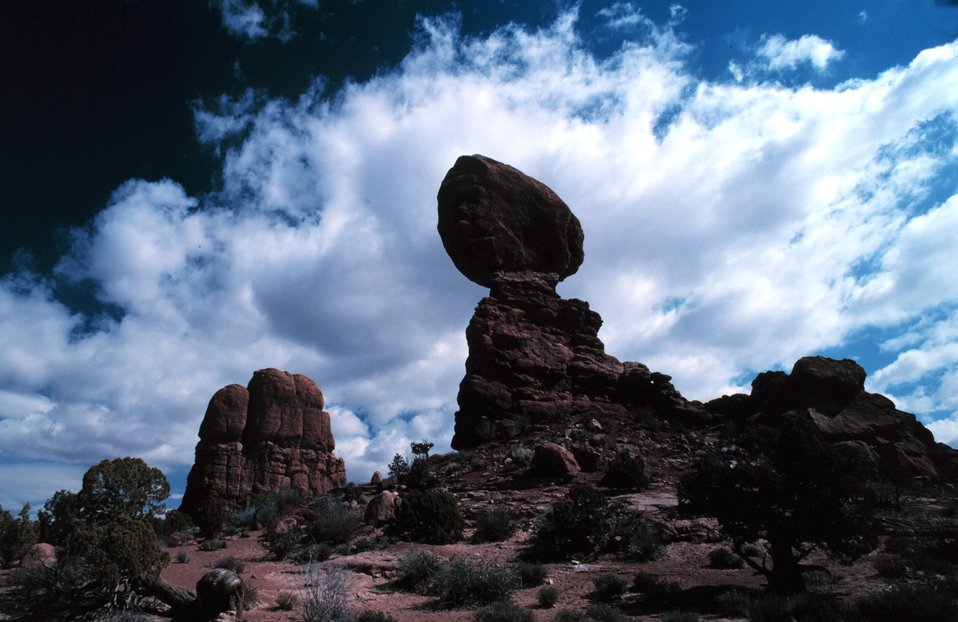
Colorado Plateau cumulus.